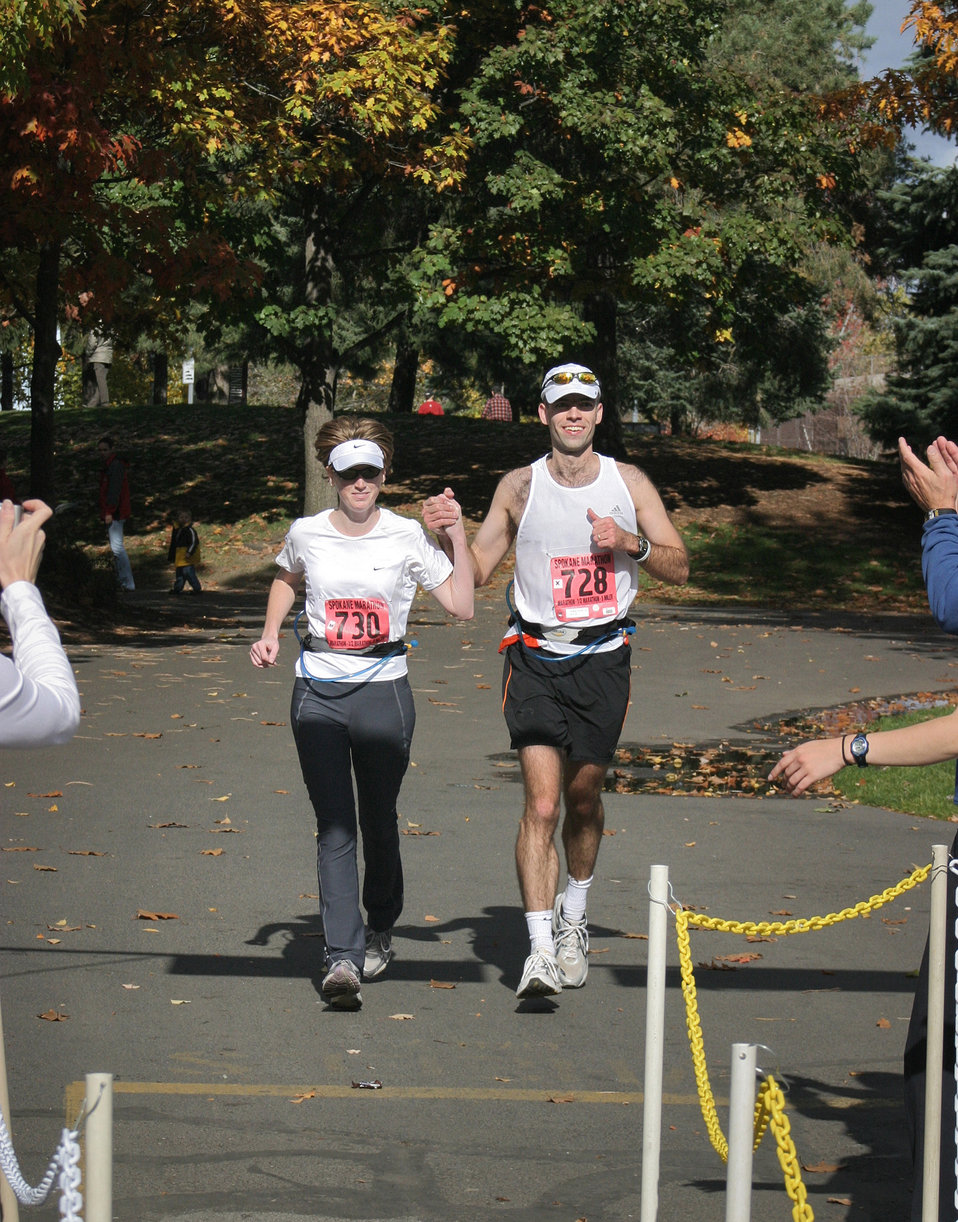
Cancer survivor

SPOKANE, Wash. -- Maj. Michael Moyles and his wife, Angela, run hand in hand toward the finish line at the Spokane Marathon. Major Moyles, who was diagnosed with brain cancer in 1999, had defied the odds to beat the cancer. He is a commercial satellite communications operational manager with U.S. Strategic Command at Offutt Air Force Base, Neb.